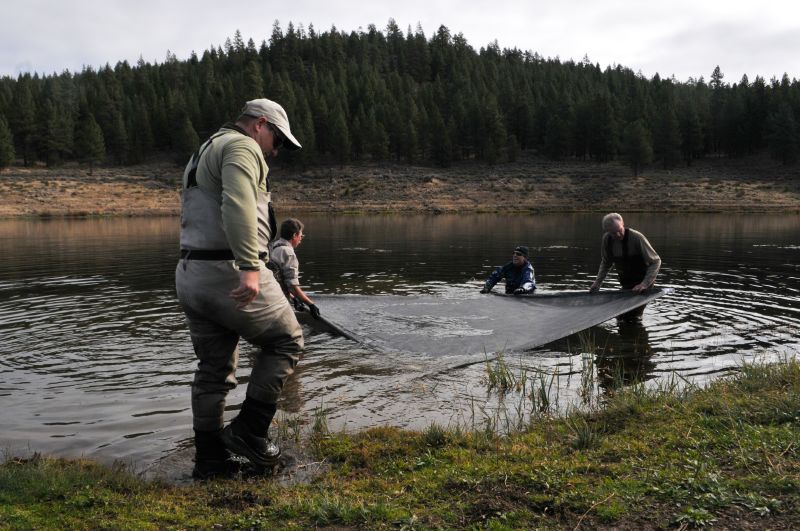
MARTIS CREEK LAKE, Calif. (Oct. 31, 2010) - Volunteers place sunlight barriers here Oct. 31 as part of a project to eradicate invasive Eurasian milfoil plants from the lake bottom. The gas-permeable barriers kill the milfoil plants by blocking sunlight, but don't disturb other plant and animal species native to the lake. The Corps is partnering with the Tahoe Divers Conservancy on the project, funded by a $20,000 grant from the Community Foundation of Western Nevada's Truckee River Fund.